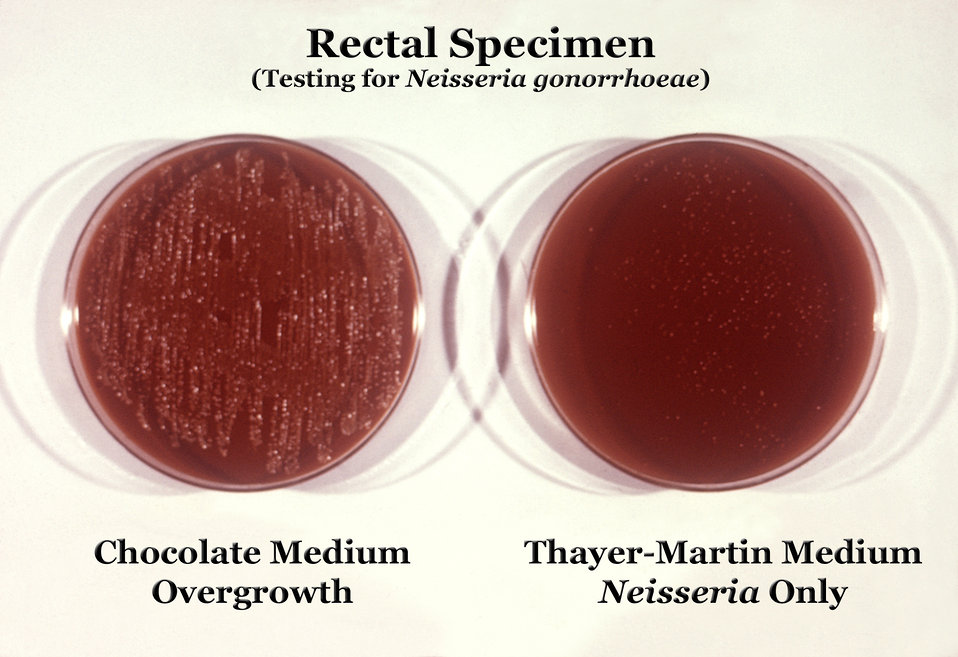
These were two culture plates used to grow colonies of Neisseria gonorrhoeae bacteria.